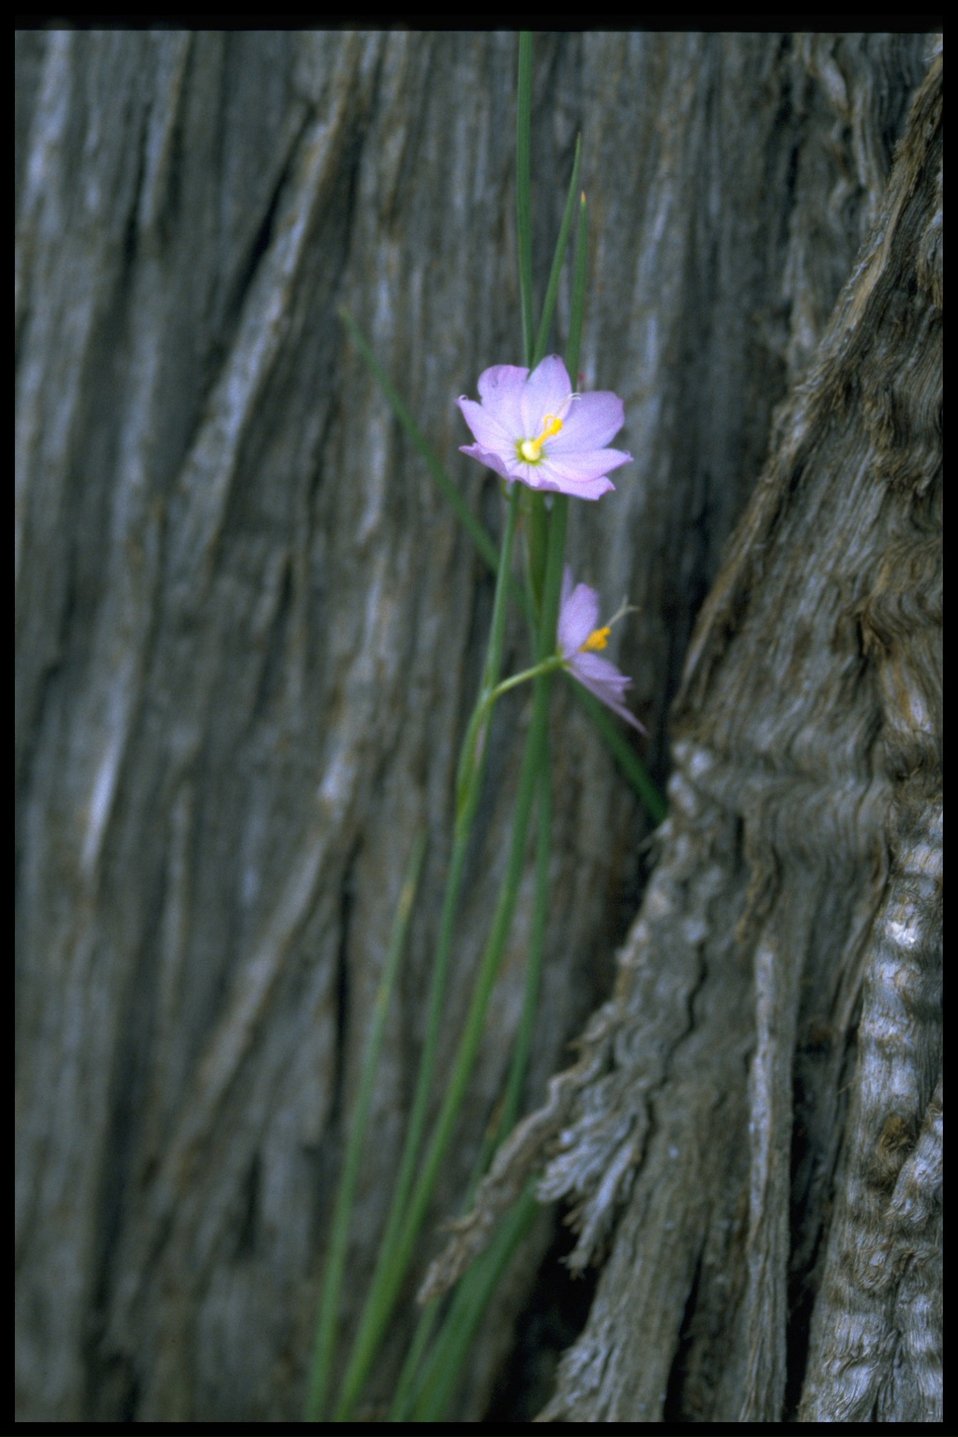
Farshot of inflated grasswidow (Olsynium douglasii var. inflatum).